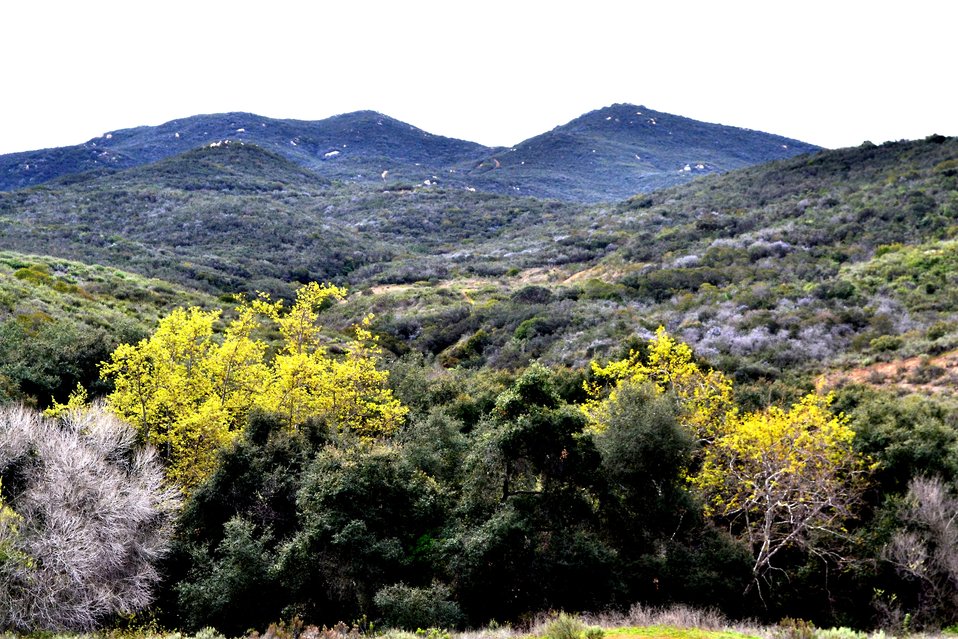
Coastal sage scrub and riparian habitat on the San Diego Refuge